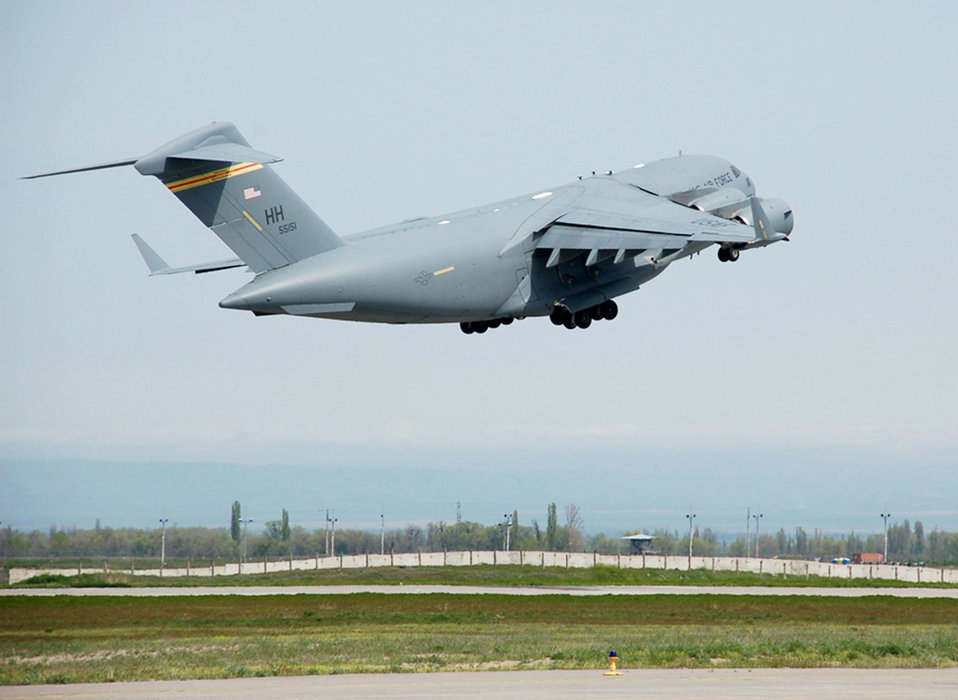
Civilian doctor observes aeromedical evac flights to help train military medics

Air Force officials escort Dr. Thomas Scalea, a leading U.S. trauma surgeon, on an aeromedical evacuation mission into Iraq Aug. 19 and 20, 2009, aboard a C-17 Globemaster III, such as the one pictured here. Doctor Scalea participated in the flight as a contributor to the Air Force's Center for Sustainment of Trauma and Readiness Skills, to observe the conditions Air Force medical personnel face while caring for injured troops and civilians. C-STARS is an Air Force Medical Service training program that links military medical personnel with select civilian trauma care centers across the country to prepare them for the types of cases they will experience while caring for trauma patients at home and abroad.